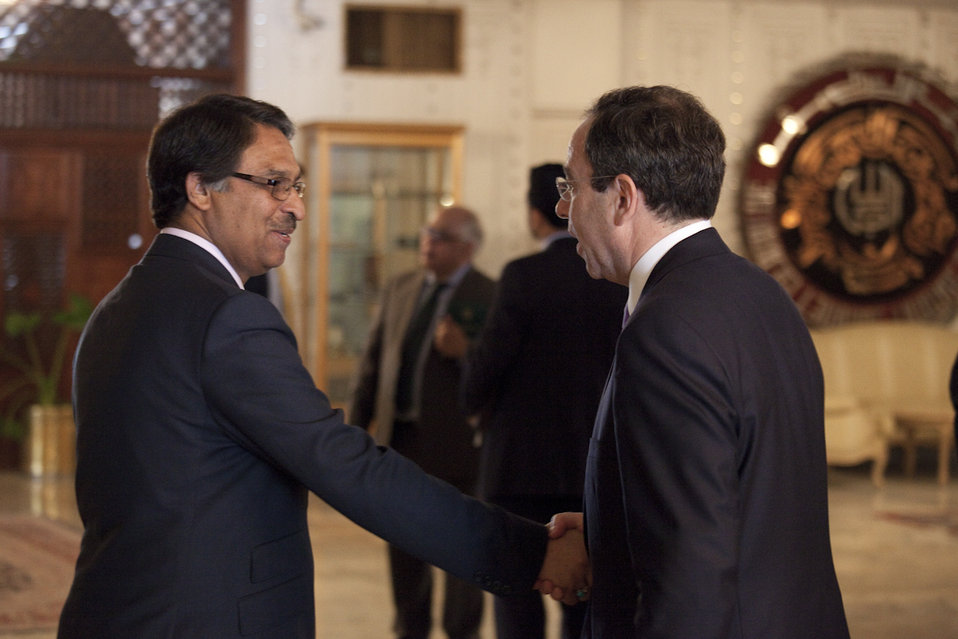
Deputy Secretary Nides Meets With Pakistani Foreign Secretary Jilani

U.S. Deputy Secretary of State Thomas Nides meets with Pakistani Foreign Secretary Jalil Abbas Jilani in Islamabad, Pakistan, on April 4, 2012.